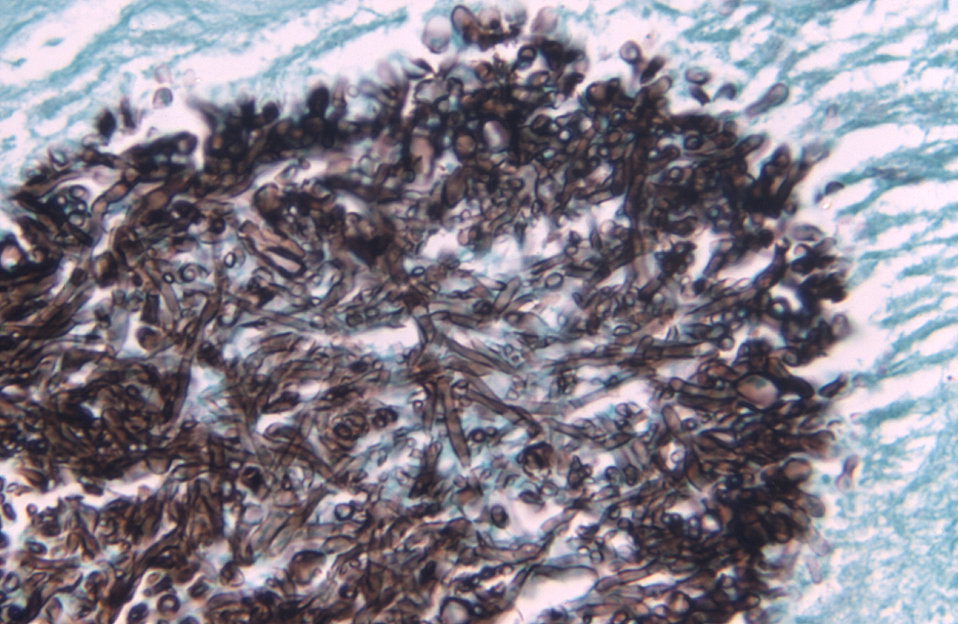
Under a relatively low magnification of 500X, this Gomori-stained photomicrograph revealed some of the ultrastructural morphology displayed by a mycetoma caused by Acremonium sp. fungal organisms.